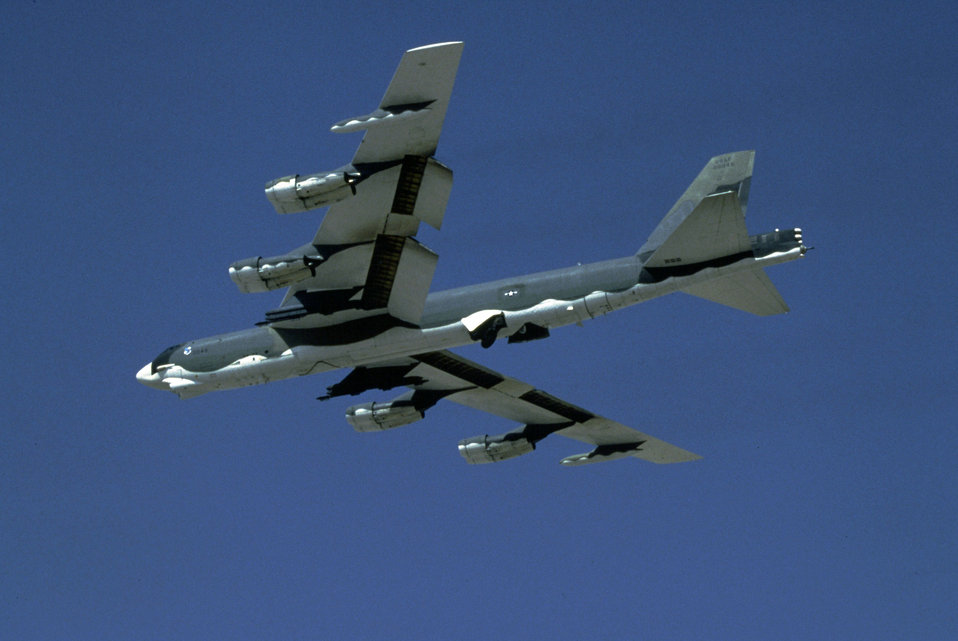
B-52 Stratofortresses

1950s -- The B-52 Stratofortress joined the Air Force inventory in February 1955. It is still flying.